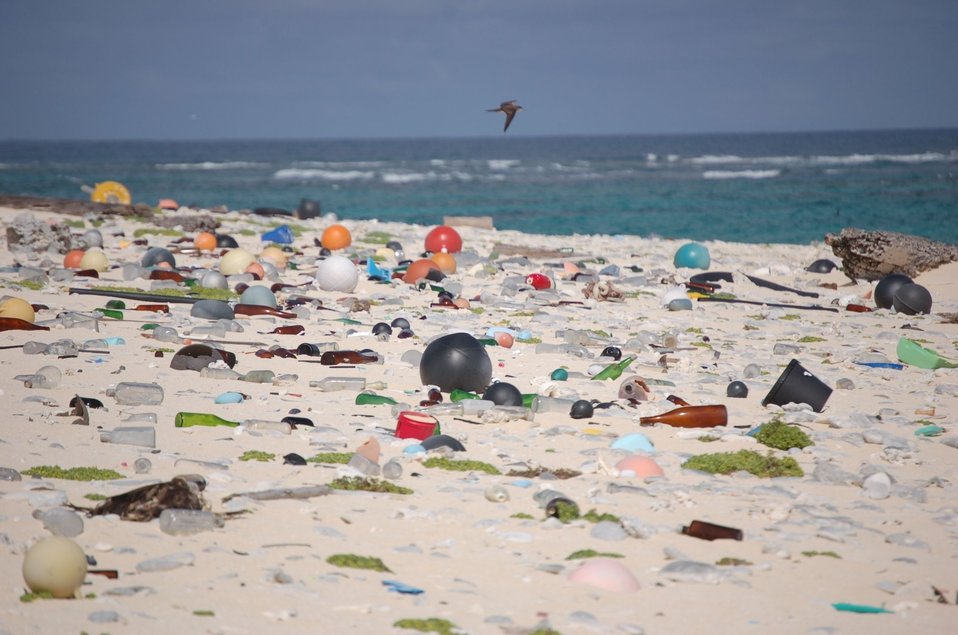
Beach strewn with plastic debris

Marine debris litters a beach on Laysan Island in the Hawaiian Islands National Wildlife Refuge, where it washed ashore.